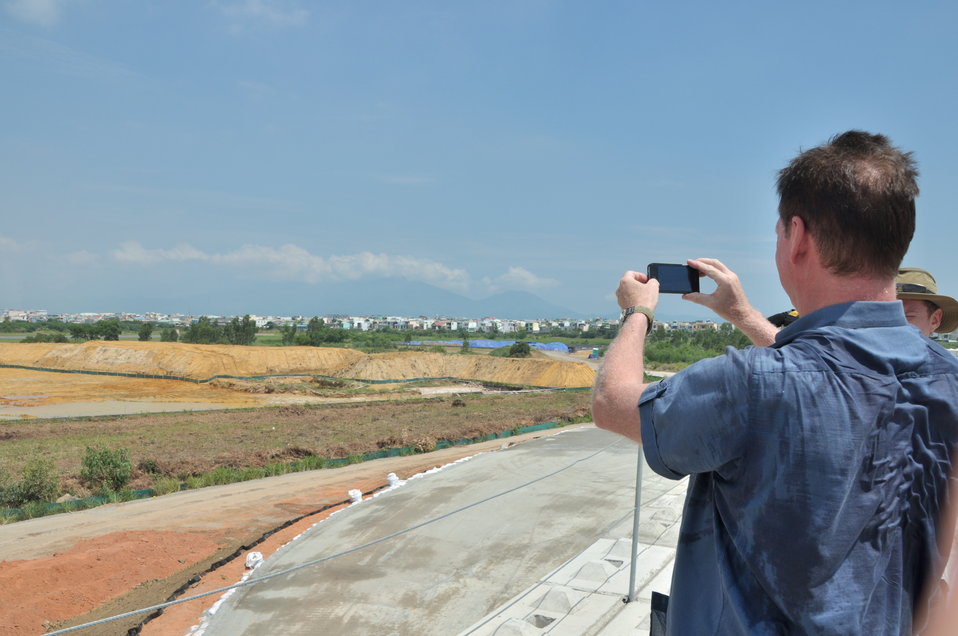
Media Tour of Environmental Remediation of Dioxin Contamination at Danang Airport

Danang, Vietnam
April 24, 2013